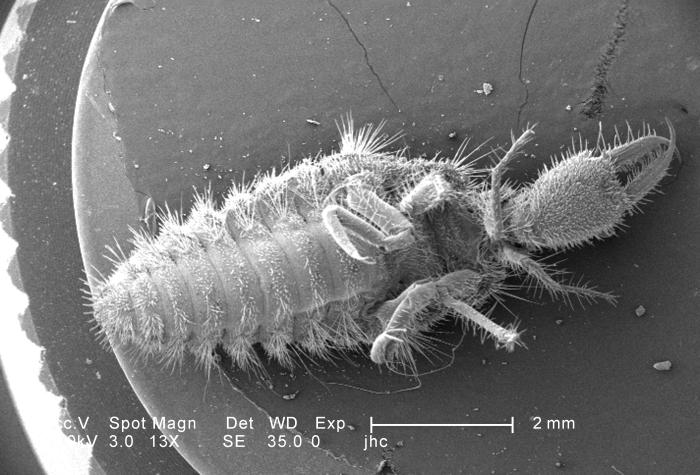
Under a very low magnification of 13X, this scanning electron micrograph (SEM) depicted the entire ventral surface of a larval-staged antlion, sometime referred to as a 'doodlebug', because of the trails it leaves in the soft sand as it hunts for prey. This arthropod, i.e., jointed legs, undergoes dramatic morphologic changes when it metamorphoses into a beautiful flying antlion lacewing. See PHIL 11818 for a colorized version of this image.